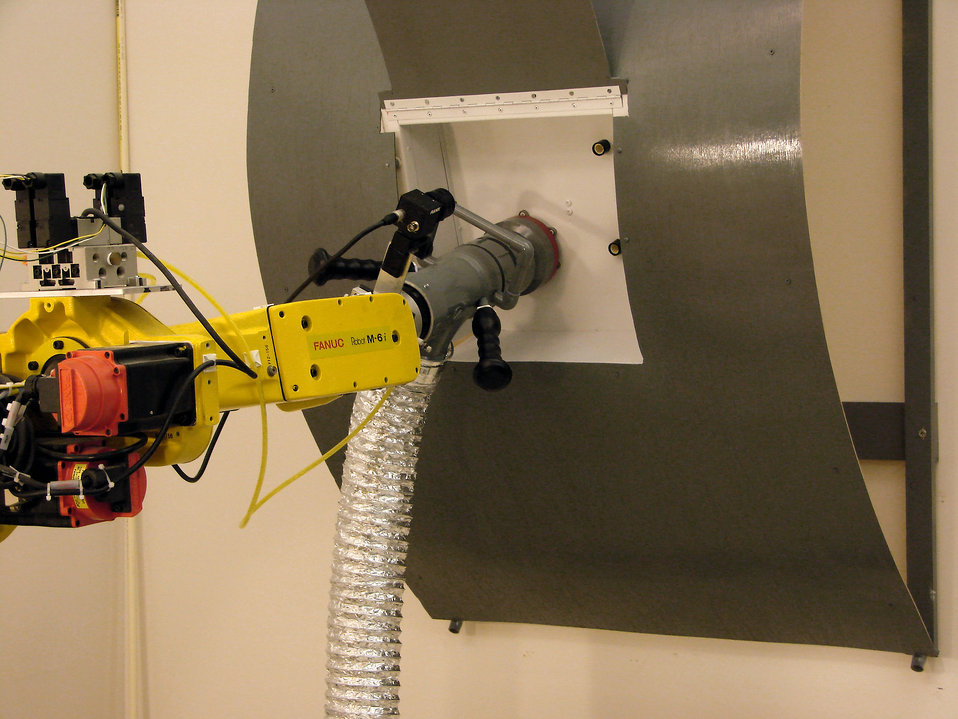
Air Force officials looks at robots for aircraft ground refueling

Air Force Research Laboratory researchers are developing a robot for automated aircraft ground refueling at Wright-Patterson Air Force Base, Ohio. In this photo, Air Force Research Laboratory's automated aircraft ground refueling system mock-up simulates performing a refueling test.